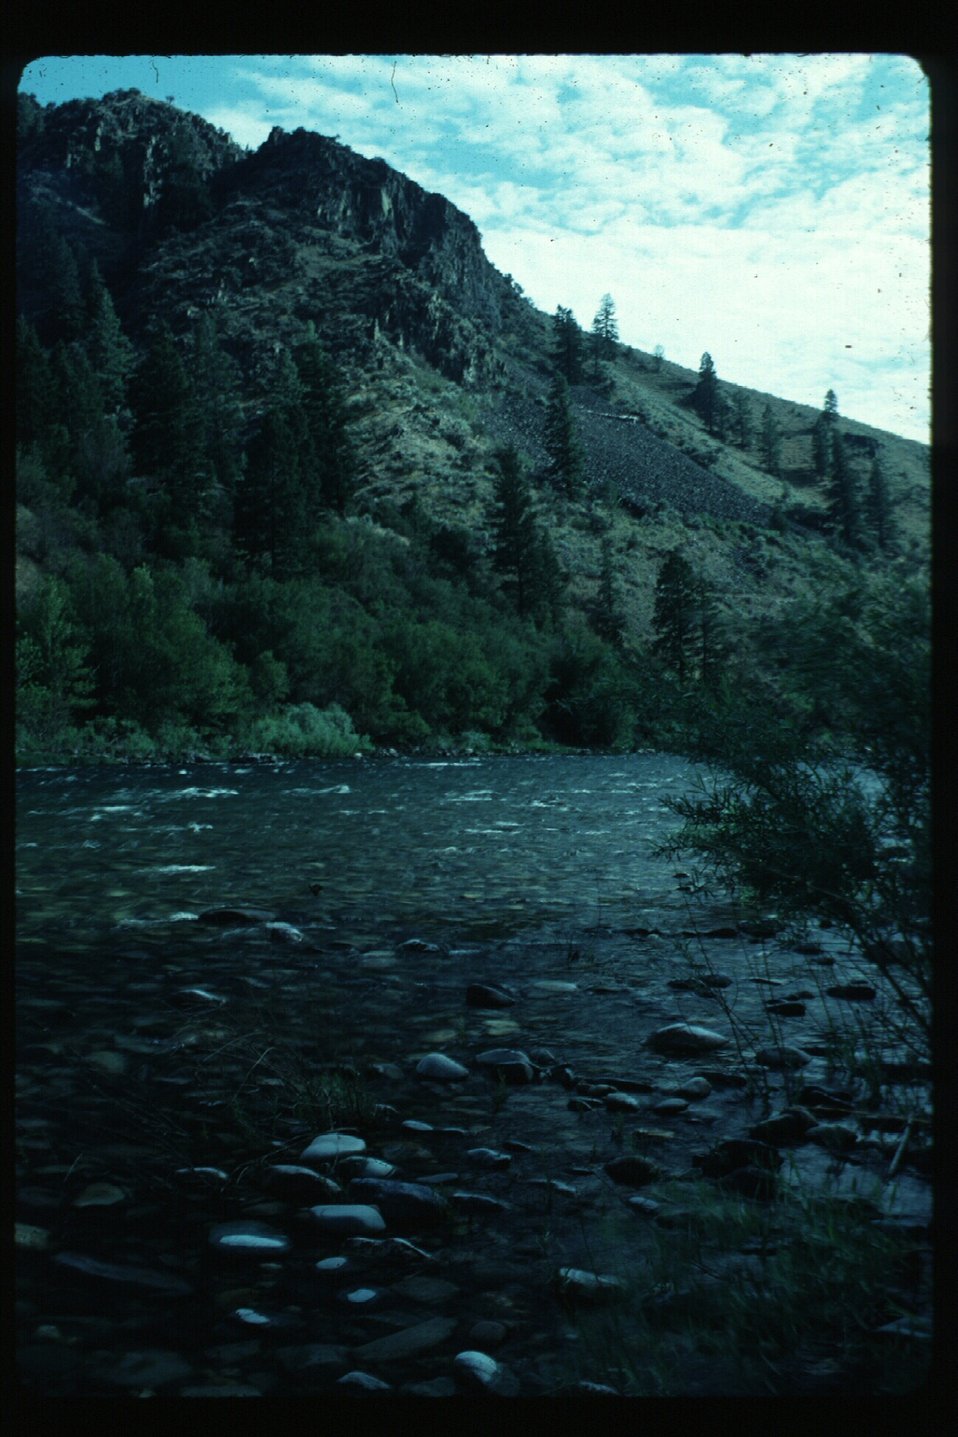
Salmon River Scenic Salmon Field Office UCSC Upper Columbia Salmon Clearwater District